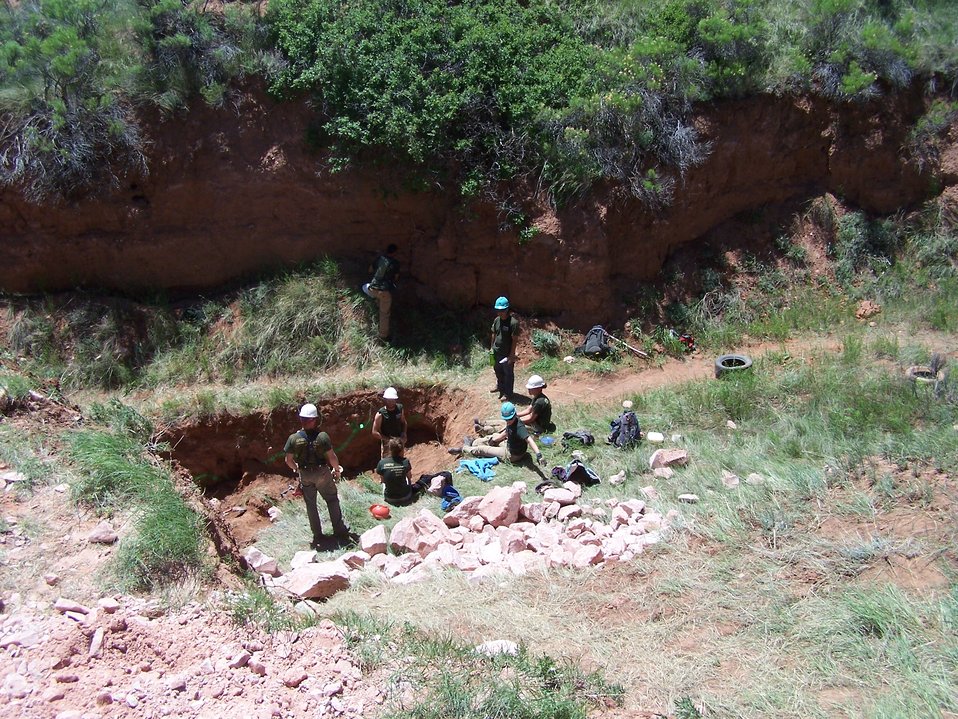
Restoration Project Lunch Break

A Youth Corps work crew of wildland restoration volunteers share lunch during a break from hand-building erosion-control structures in Larimer County, Colo.

The project was funded by the U.S. Fish and Wildlife Service’s Partners for Fish and Wildlife program, whose habitat restoration projects are extraordinary engines for the U.S. economy. Restoration Returns: The Contribution of Partners for Fish and Wildlife Program and Coastal Program Projects to Local U.S. Economies finds that, in working directly with partners to implement vital on-the-ground habitat restoration, Service programs created more than 3,900 jobs in Fiscal Year 2011, generating a total economic stimulus of $327.6 million.

The “restoration economy” is a subset of green jobs that includes such industries as heavy equipment providers and operators, plant nurseries, landscape architects, and construction companies, among other firms.

Download the entire report at: www.fws.gov/home/restoration returns.html.